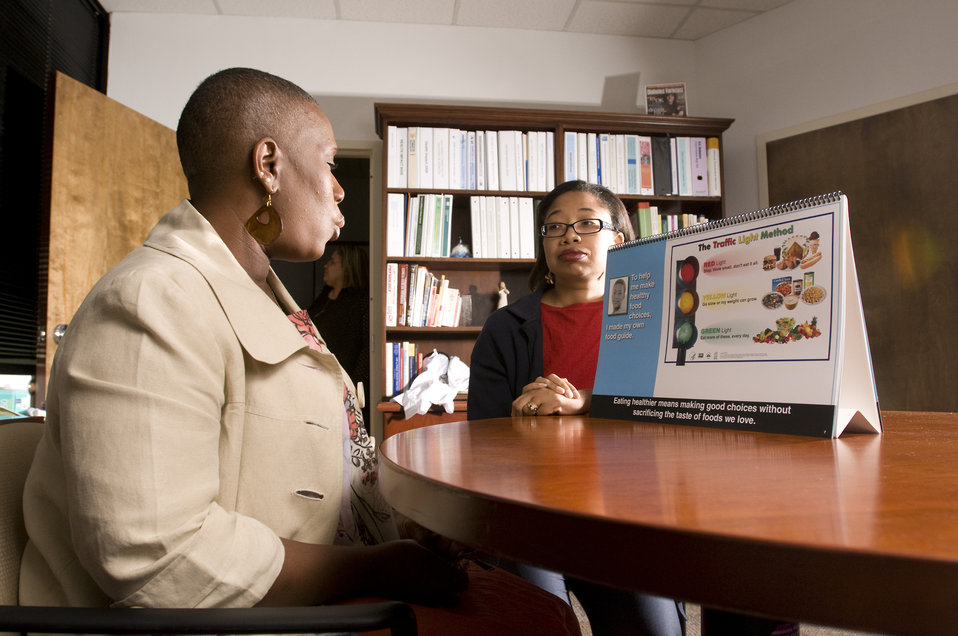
This image depicts a person with diabetes in the foreground listening to a community health worker familiar with the necessary diet needed to maintain control over the detrimental effects of this disease. The health worker was using a flip chart that, for the moment, was turned to a page discussing the use of the 'Traffic Light Method' to label foods.